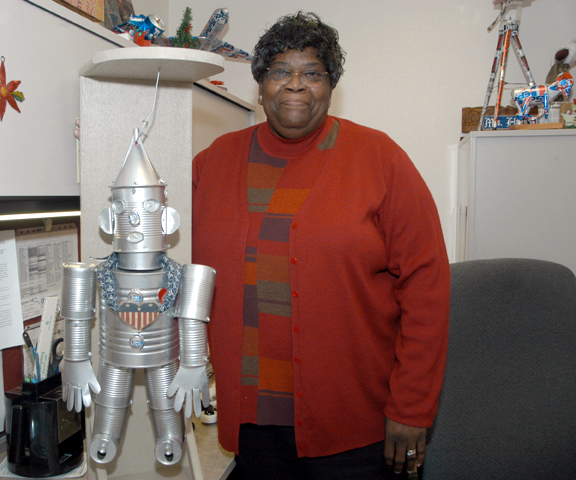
Making art out of recyclables

ANDREWS AIR FORCE BASE, Md. -- Helen Walker displays a true tin man, her favorite personal can creation. Walker uses all types of cans and recycled materials to create a variety of sculptures. She is the 89th Civil Engineer Squadron's maintenance flight quality assurance evaluator.